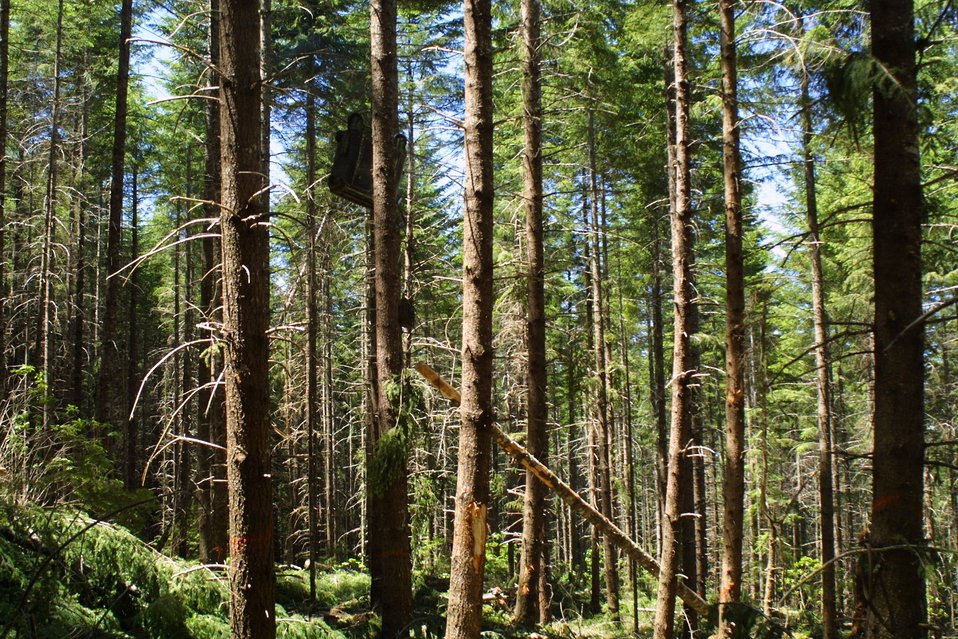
Camas East Timber Sale in Late Successional Reserve.